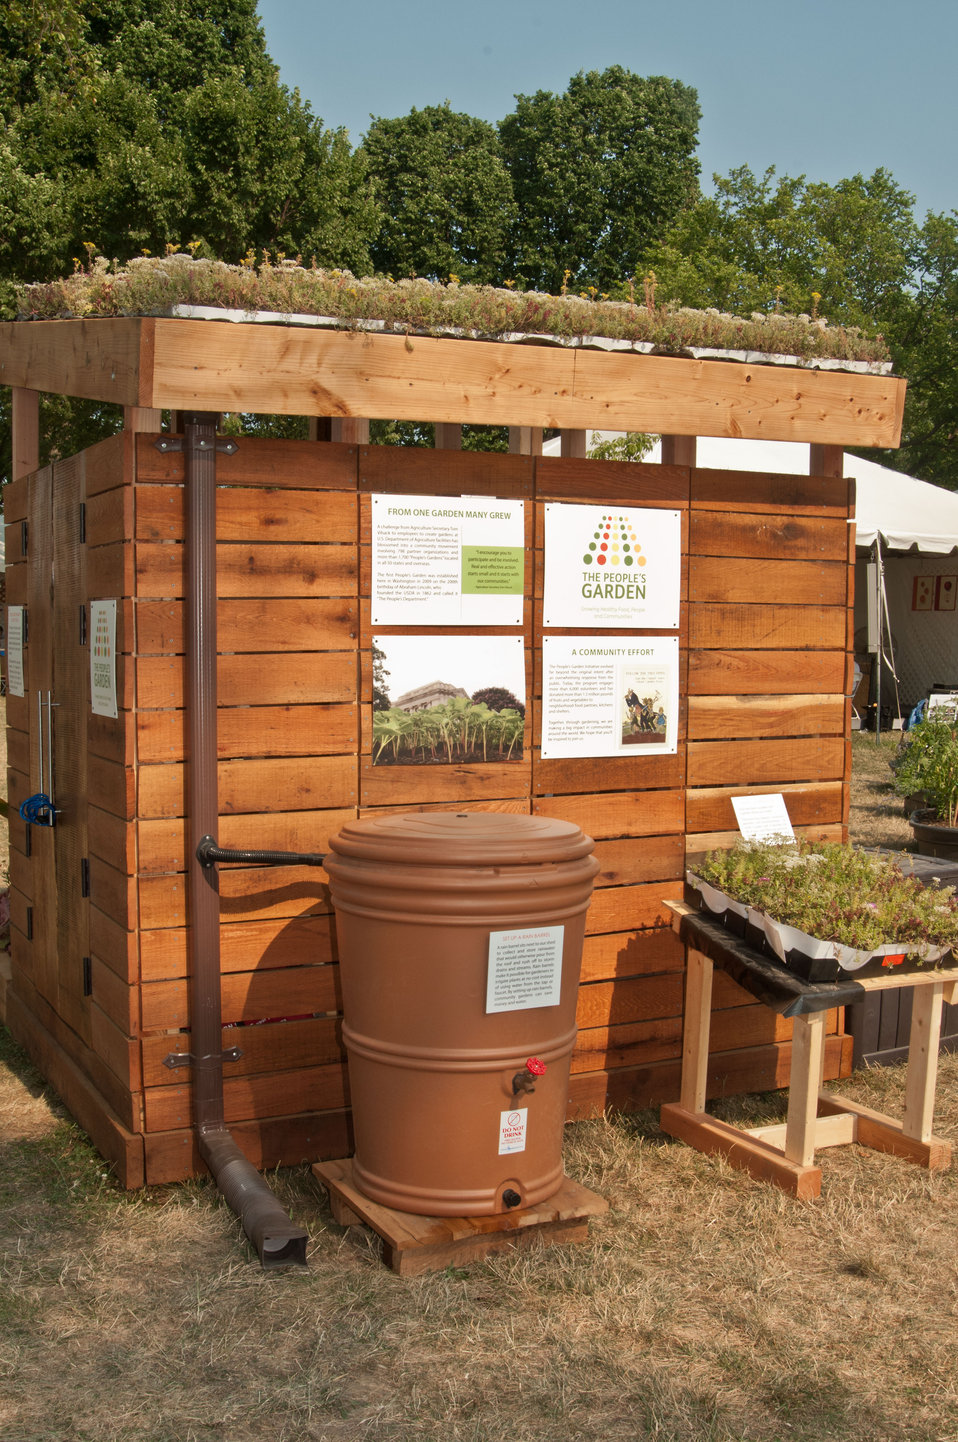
U.S. Department of Agriculture (USDA), People’s Garden Initiative Green Roof Shed features a rain barrel water collection system at the 2012 Smithsonian Folklife Festival, on the National Mall, in Washington, D.C., on Thursday, June 28, 2012. The barrel collects and stores rainwater that would otherwise pour from the roof and rush off to storm drains and streams. Rain barrels make it possible for gardeners to irrigate plants at no cost. By setting up rain barrels, community gardens can save money and water. For example, 660 gallons of water can be collected if it rains one inch on a thousand square foot roof. For more information see blogs.usda.gov/2012/07/05/going-green-green-roofs-and-rai... One of the three themes this year is “Campus and Community.” It celebrates the 150 years of the USDA and the Land-Grant University System. The U.S. Department of Agriculture (USDA) and the Land-Grant system extend education across the country, contributing to American agriculture success and rural prosperity. “Campus and Community” has demonstrations, discussions, hands-on activities, and entertainment to that showcase the many ways that this partnership works to improve American agriculture and rural life.